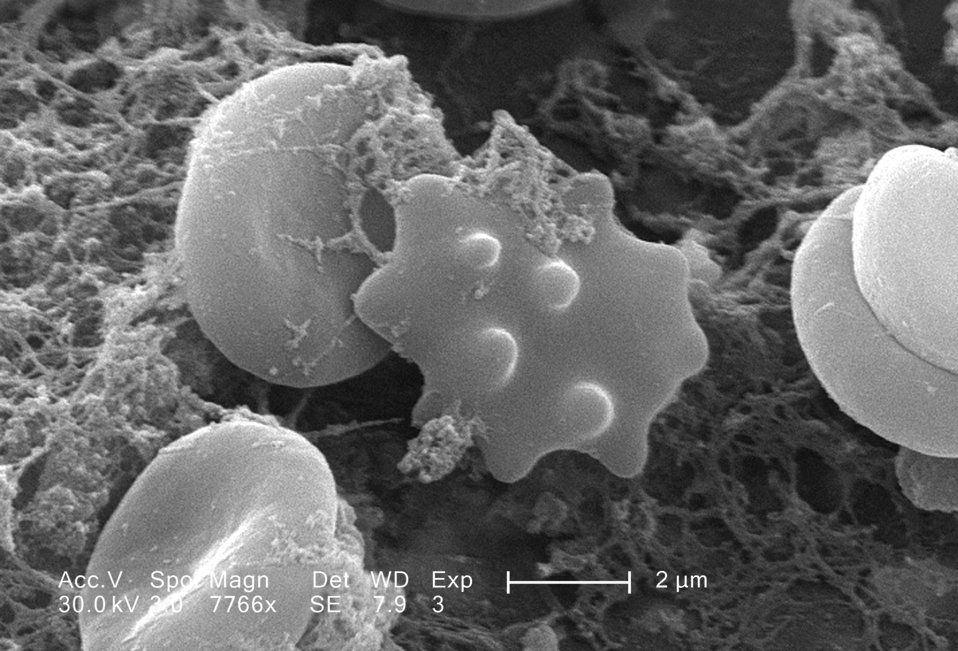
This scanning electron micrograph (SEM) depicted a number of red blood cells found enmeshed in a fibrinous matrix on the luminal surface of an indwelling vascular catheter; Magnified 7766x. In this instance, the indwelling catheter was a tube that was left in place creating a patent portal directly into a blood vessel. The erythrocyte in the center had undergone the process of 'crenation', whereupon, it developed a number of cell wall projections, thereby, transforming it into what is termed an 'acanthocyte', or 'spur cell'. See PHIL 10911 for a colorized version of this micrograph.